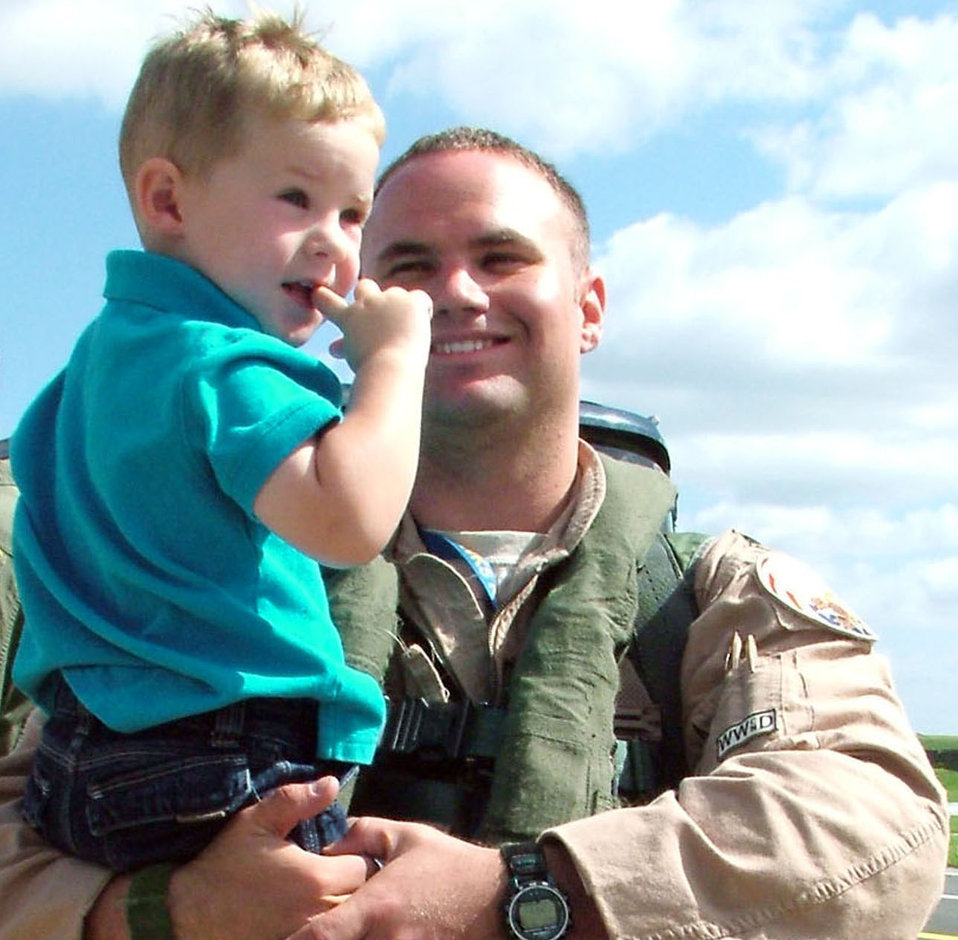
Home again

Capt. Matt Lande holds his 2-year-old son, Nick, after the captain arrived at Spangdahlem Air Base, Germany, on Labor Day. The F-16 Fighting Falcon pilot with the 23rd Fighter Squadron, was one of six pilots that returned home with their jets after a more than two month deployment to Southwest Asia. It was the captain's first deployment. The unit provided close-air support to coalition forces in Iraq and Afghanistan. The flight back home took eight hours. The rest of the squadron will return home in the next week.